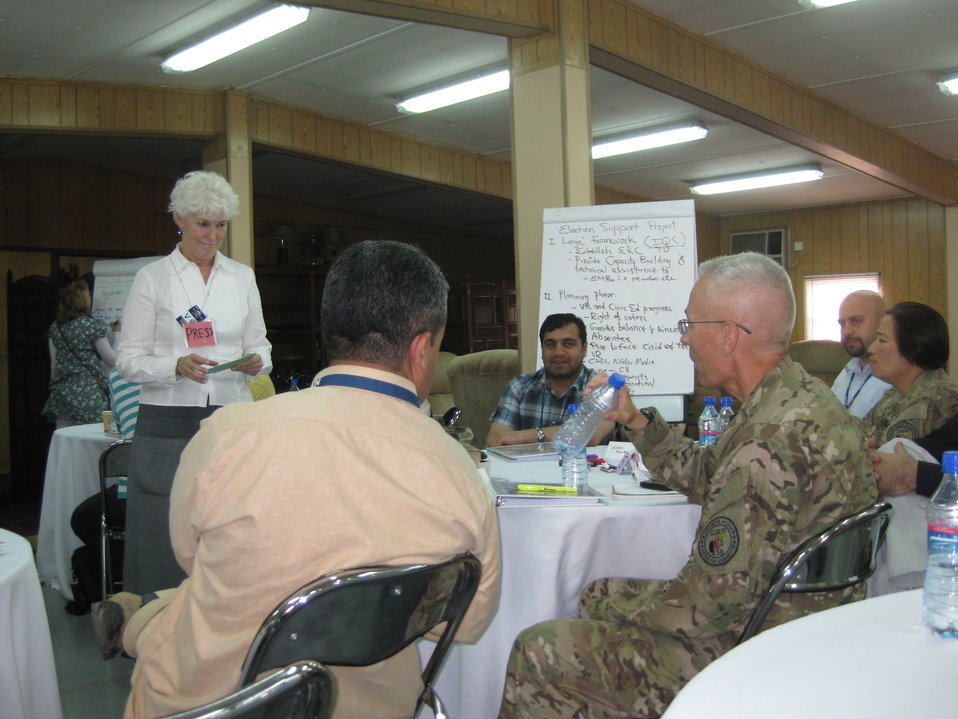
Afghan Youth Voices 045